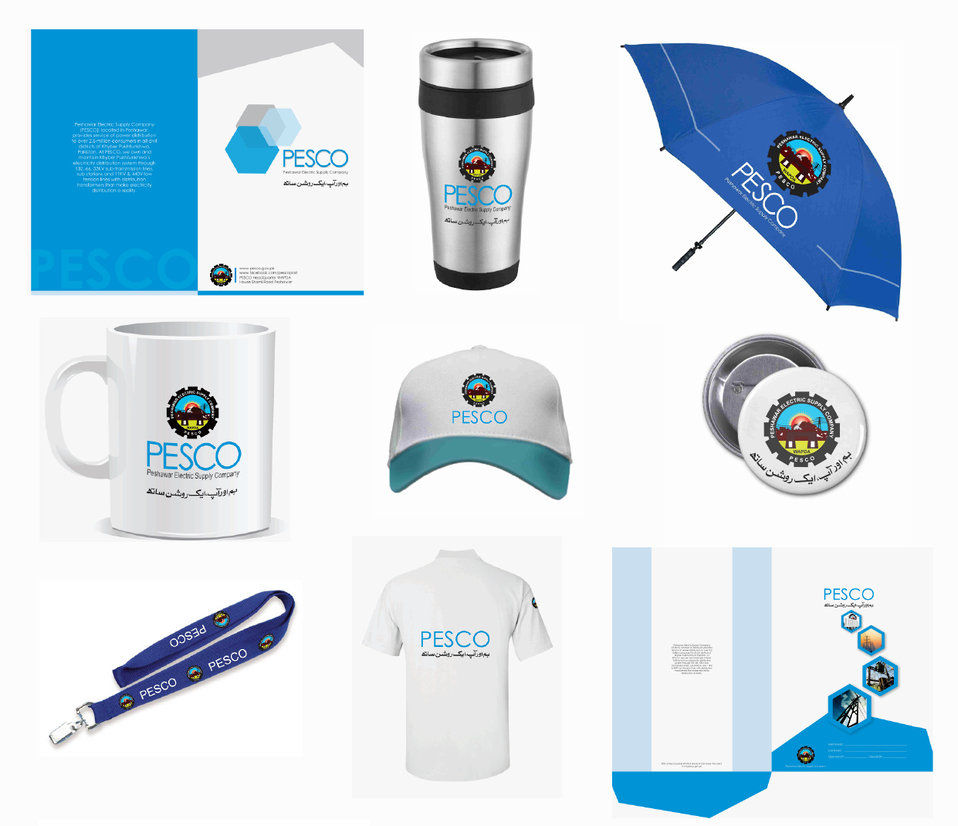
Repositioning the Peshawar Electric Supply Company Brand

IMAGE BUILDING
“Our PESCO brand repositioning has proved instrumental, not only in building an improved image of PESCO amongst its customers and the public at large, but in contributing to the internal change management process to turnaround the company into a progressive unit. In just a few months since, one can safely say that we are fast moving towards the ‘One Team – One Vision – One Mission’ motto.”
Peshawar Electric Supply Company, Director General Public Relations
Shaukat Afzal

(Picture Above) Repositioning the Peshawar Electric Supply Company Brand: Due to the severe energy shortfall in the Khyber Pakhtunkhwa, PESCO’s image has deteriorated in the recent past. In order to create a softer image and increased awareness about PESCO’s role in improving delivery of reliable power, the USAID Power Distribution Program is working on repositioning the PESCO brand toward a more progressive and customer-friendly image that is accessible to the public and flexible enough to accommodate changing trends.